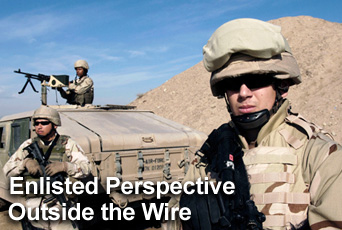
Enlisted Perspective

In the newest